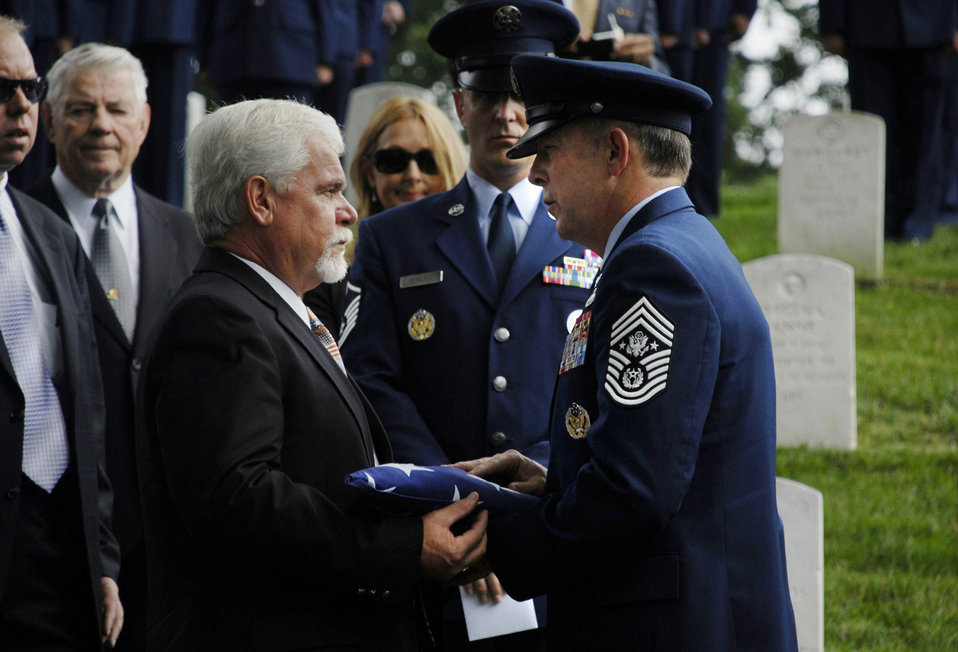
Chief Airey laid to rest at Arlington Cemetery

Chief Master Sergeant of the Air Force Rodney J. McKinley presents a flag to retired Chief Master Sgt. Dale Airey, during the memorial service for his father Chief Master Sgt. Paul W. Airey at Arlington National Cemetery, Va., May 28. Chief Airey, serving 27 years, became the first Chief Master Sergeant of the Air Force April 3, 1967, following his installment by then Secretary of the Air Force Harold Brown and Air Force Chief of Staff Gen. John P. McConnell. Chief Airey retired from active duty on Aug. 1, 1970 and died March 11 in Panama City, Fla. Chief Airey and his wife Shirley's remains were buried together at Arlington National Cemetery.